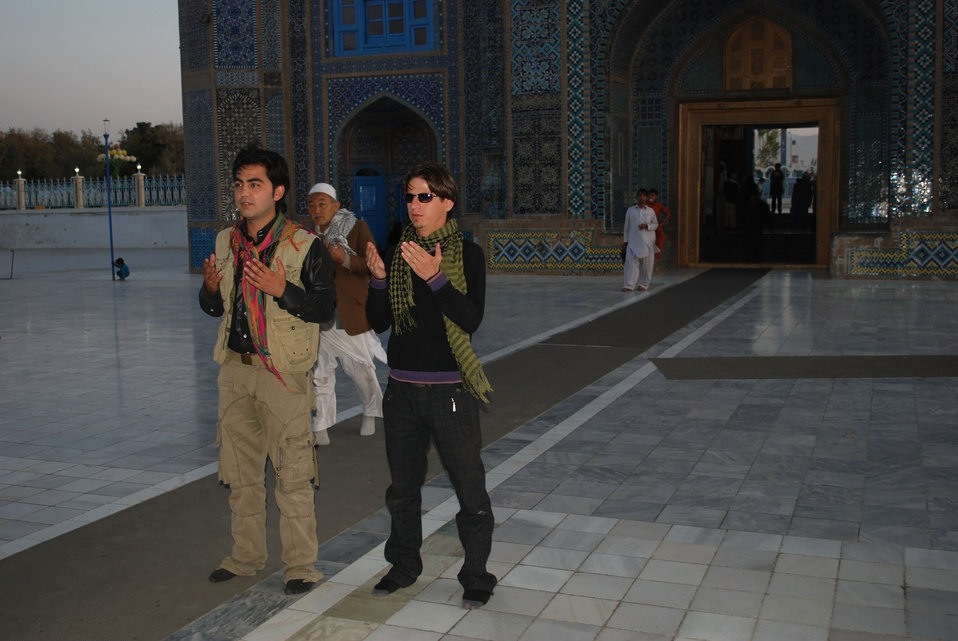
'On the Road' in Balkh Province